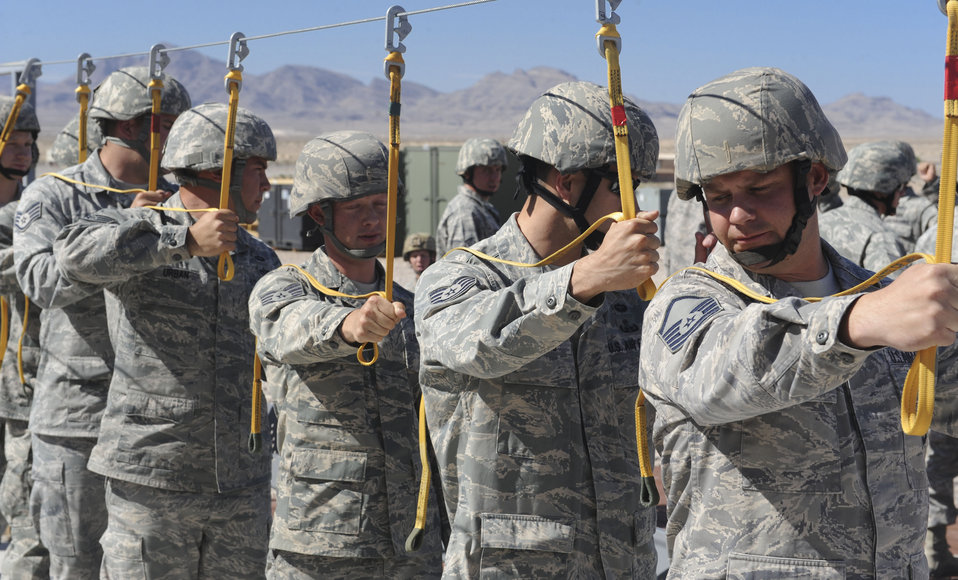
Airmen, Soldiers complete MAFEX

Airmen from the 820th RED HORSE Squadron participate in airborne sustainment training for Mobility Forces Exercise 12A at Nellis Air Force Base, Nev., May 22, 2012. The training prepared Airmen for future deployments with the U.S. Army.